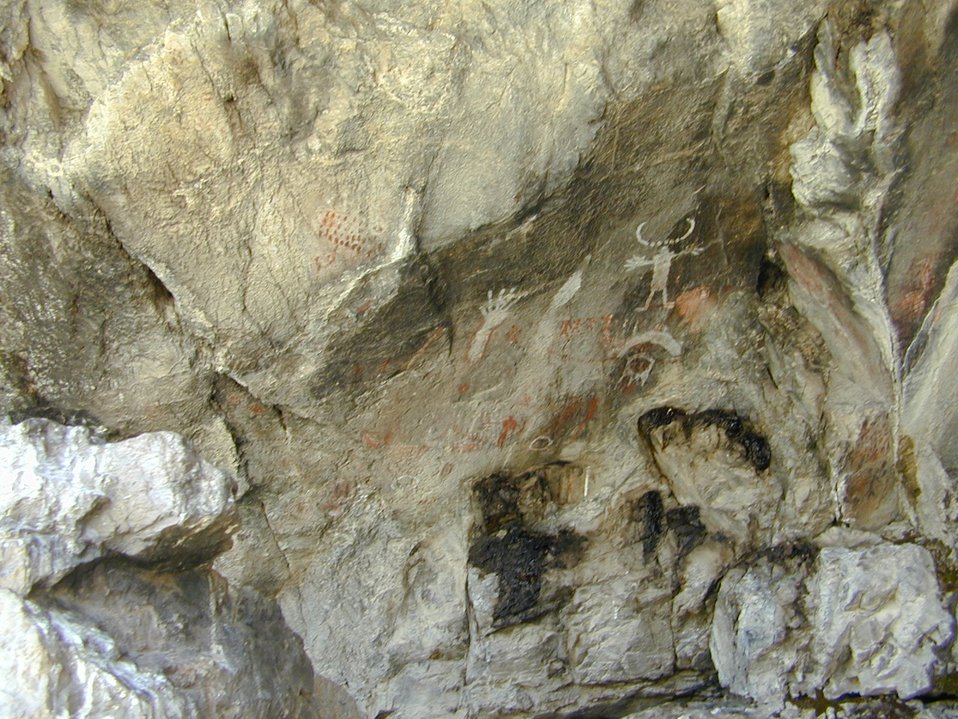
Birch Creek Valley Salmon Field Office Upper Columbia-Salmon Clearwater District